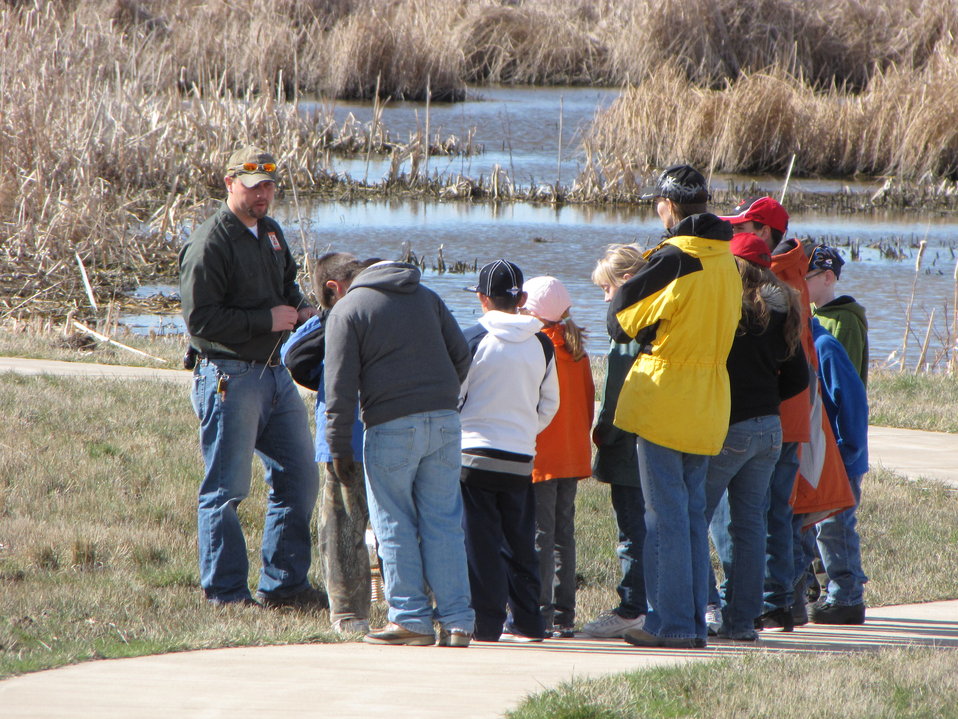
Plant Walk

Volunteer intern Chris leads a group on a plant walk during the Mountain Wilds to Wetland Wonders program at Bear River Migratory Bird Refuge. The 4th grade students learned to identify common wetland plants and learned about historical uses of these plants by native peoples and wildlife.